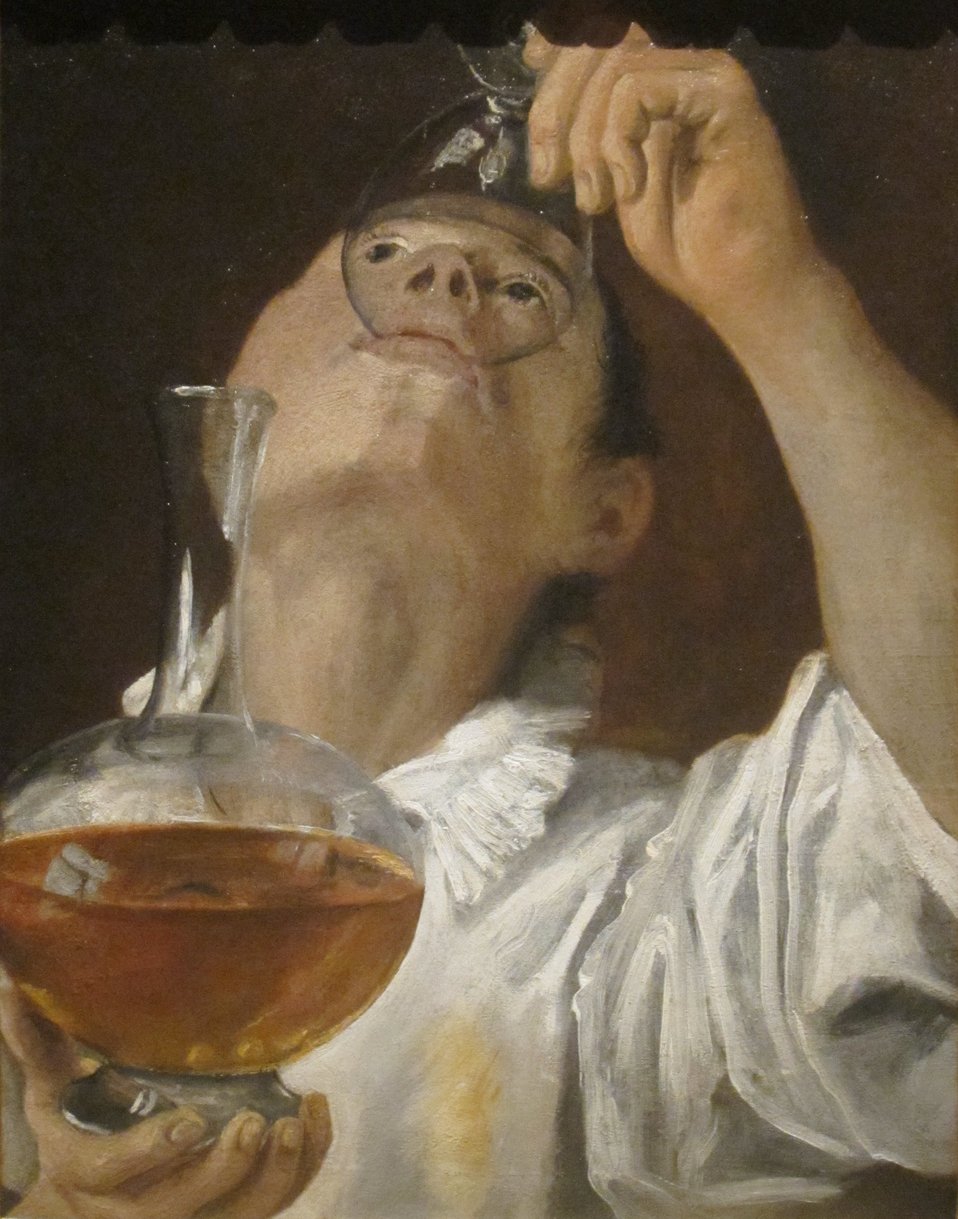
'Boy Drinking' by Annibale Carracci, 1582-83